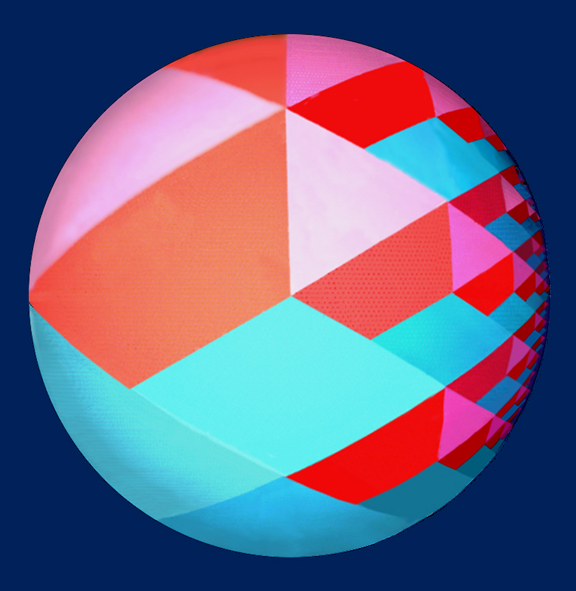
'Pythagorean Tree'